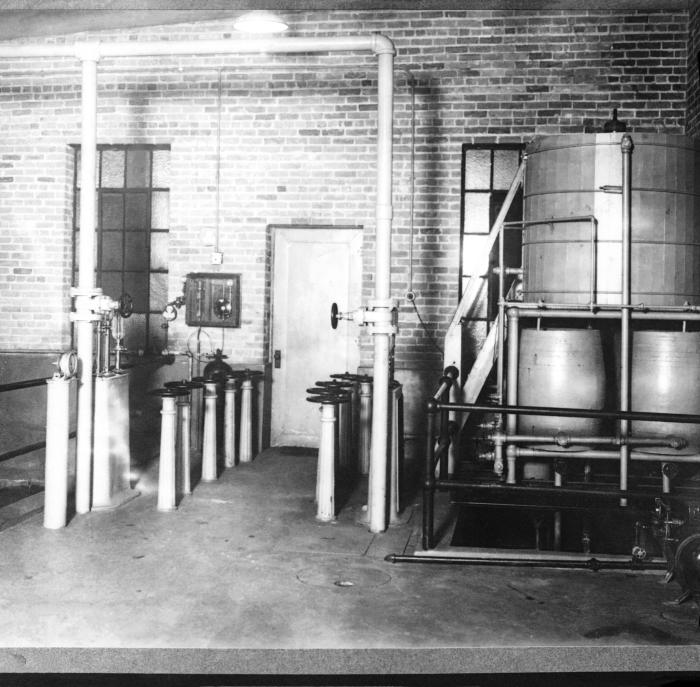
This historic 1916 photograph depicted an interior view of the Chisholm, Minnesota, Water and Light Company's water filtration plant, which was used to purify the town's potable water supply. An exterior view was pictured in PHIL image #8481.